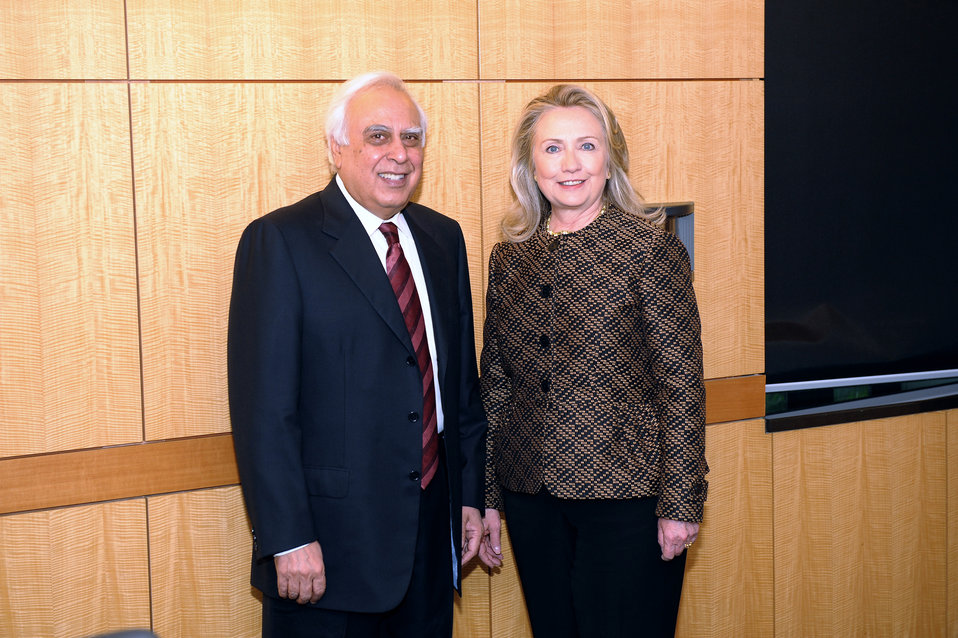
Secretary Clinton Poses for a Photo With Indian Minister for Human Resource Development Kapil Sibal

U.S. Secretary of State Hillary Rodham Clinton poses for a photo with Indian Minister for Human Resource Development Kapil Sibal after the U.S.-India Higher Education Summit at the George C. Marshall Center in Washington, D.C. on June 12, 2012.